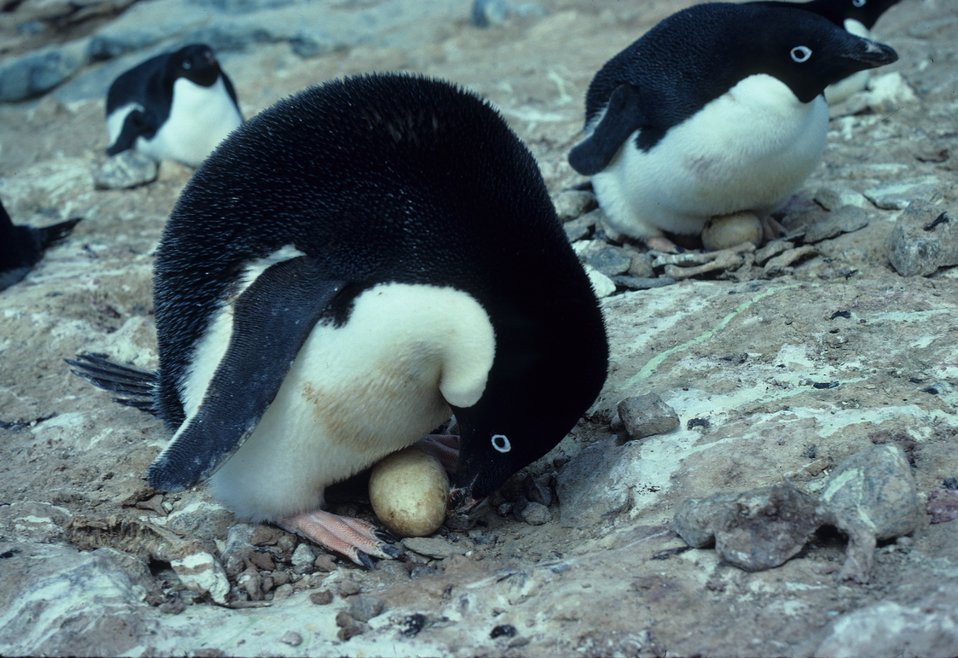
Adelie Penguin & egg.